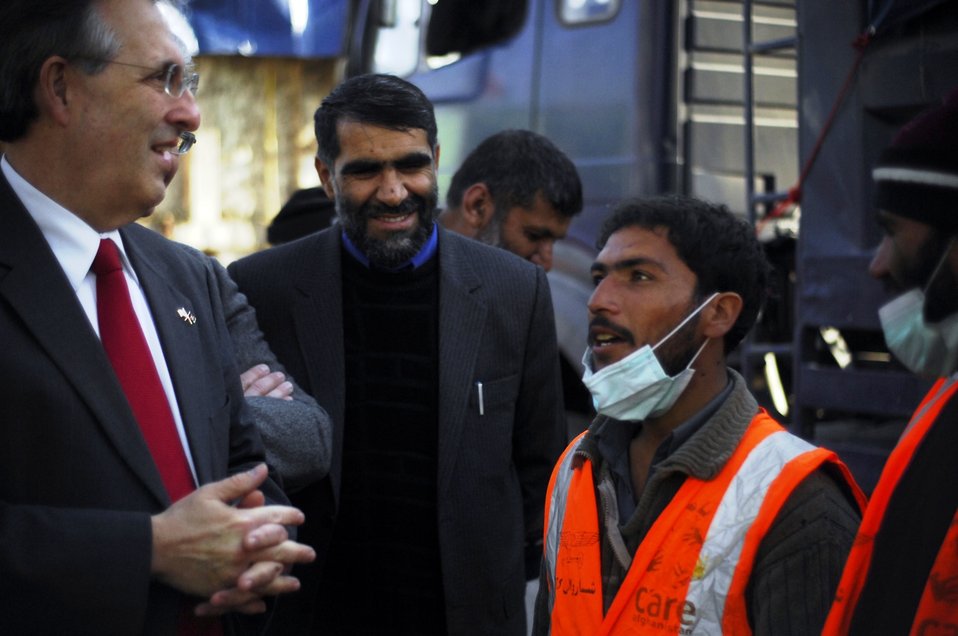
Care11